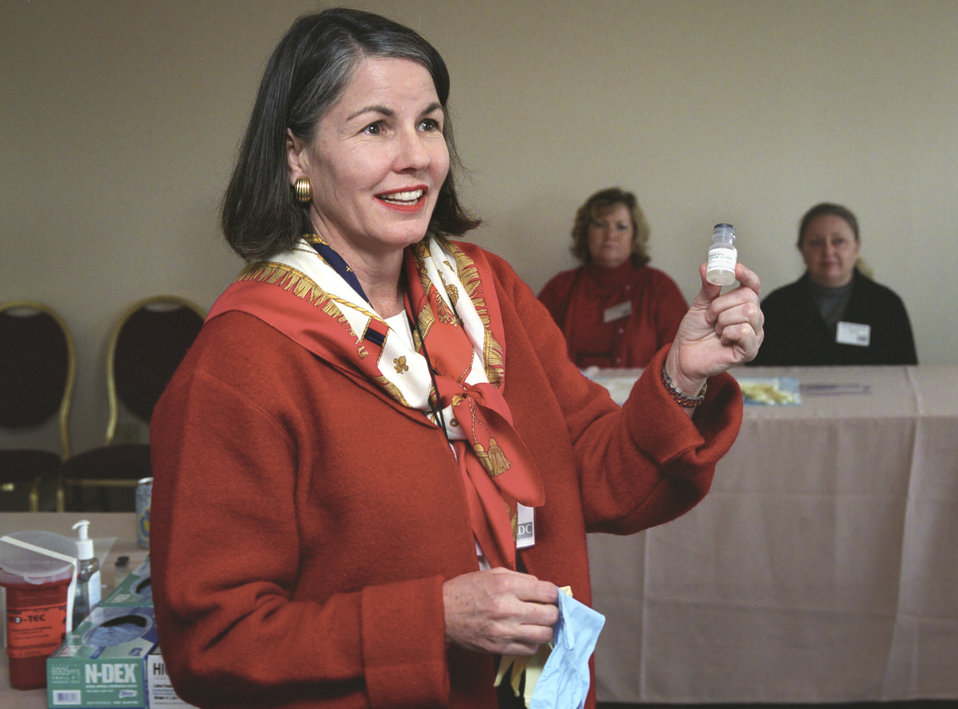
CDC clinician, Melanie King, RN, explains smallpox vaccine application during a 2002 Vaccinator Workshop.